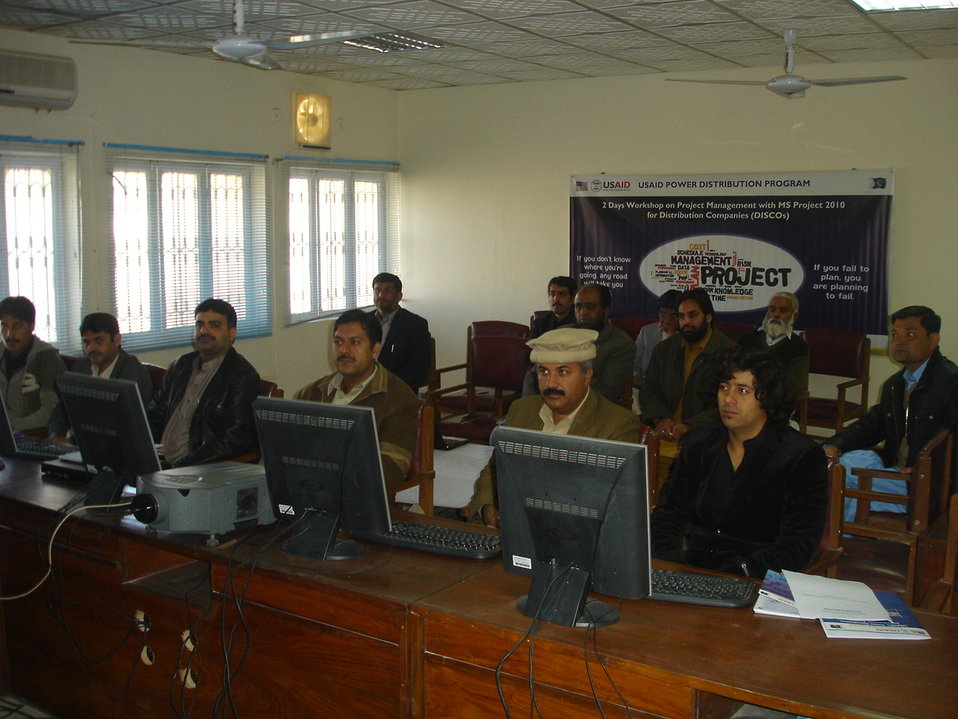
18 Dec - 2-Day Project Management Workshop at QESCO

A 2-day workshop on ‘Project Management with MS Project-2010’ was organized at the QESCO HQ for the DISCO’s project directors, managers and engineers enabling them to understand the best practices in the field of Project Management. The prime focus was on the application of MS Project 2010 for enabling the participants to use this tool, after which the participants can plan, manage and control their current and future projects in a more efficient manner.